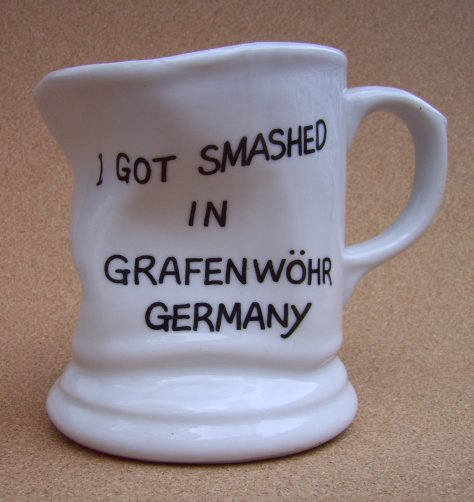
A coffee mug purchased in Grafenwöhr, Germany.